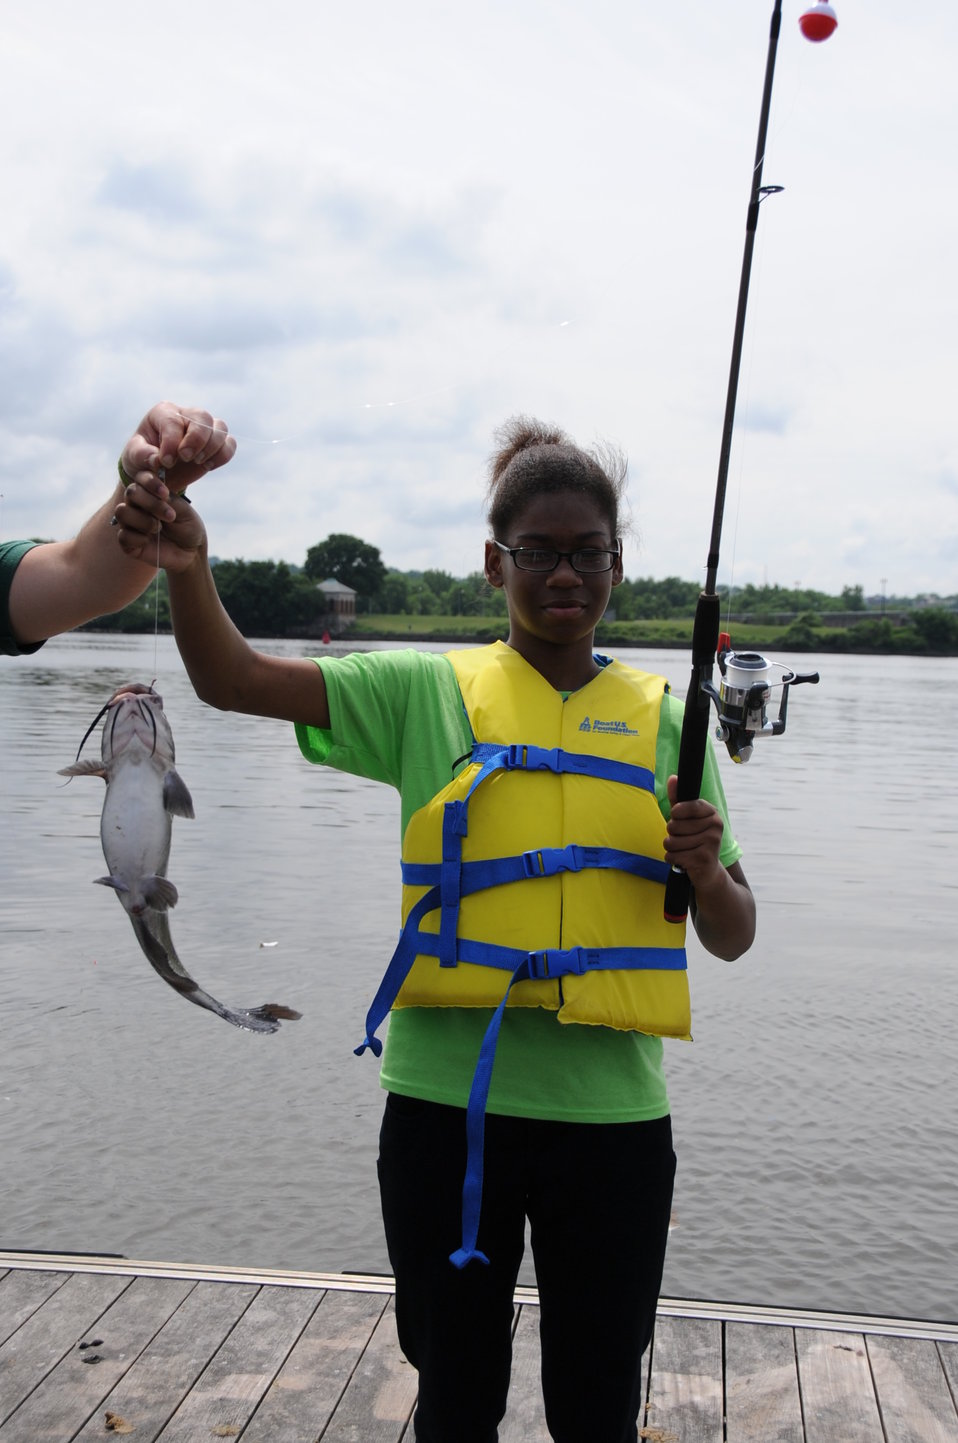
2013 National Fishing and Boating Week

Local students prepare to enjoy fishing at the annual kick-off of National Fishing and Boating Week on the Anacostia River in Washington D.C.